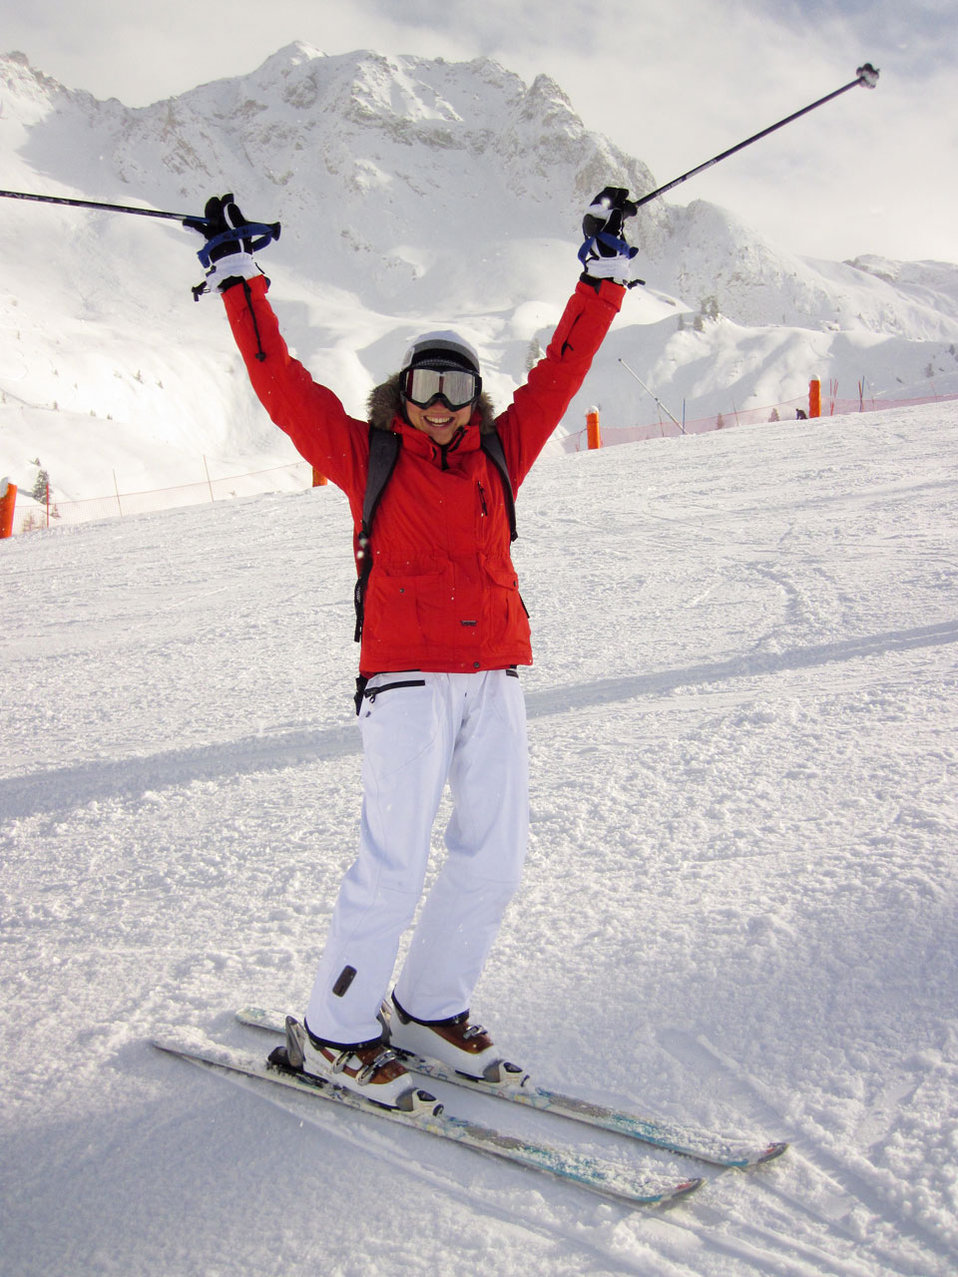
Happy skier

Happy female skier with her hands up.